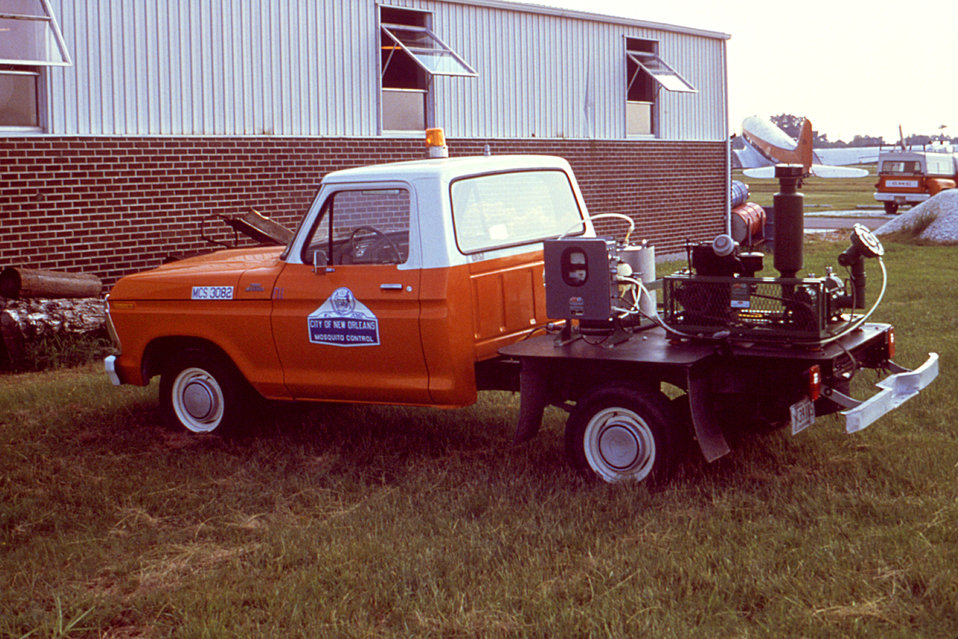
This 1981 image depicts a New Orleans, Louisiana mosquito control vehicle outfitted with a truck-mounted LECO-HD ULV (ultra-low volume) non-thermal fog generator equipped with a CV control panel.